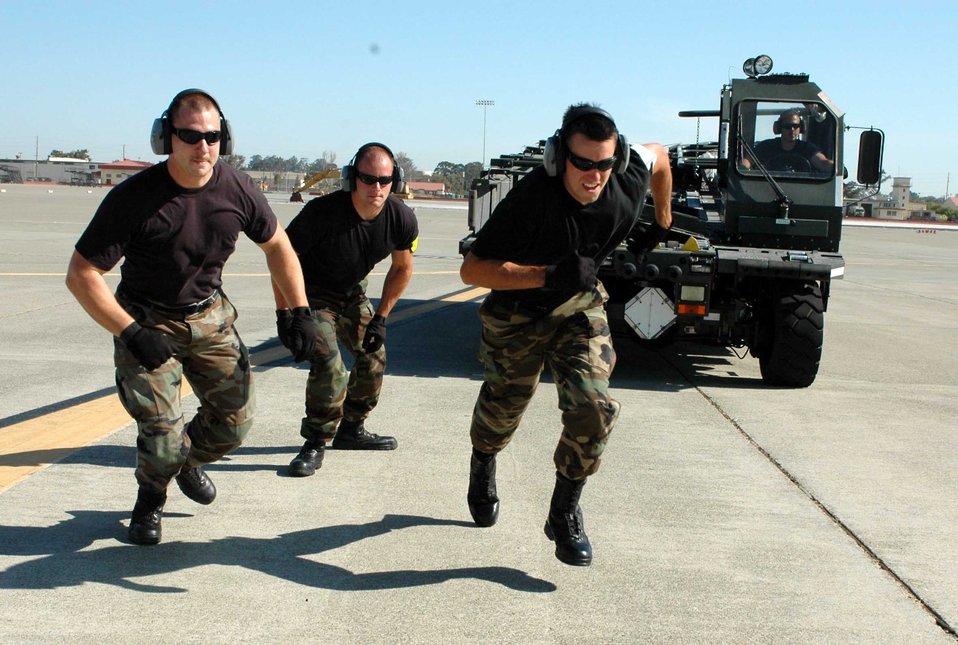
Loading up for Rodeo

Staff Sgt. Joseph Chilton, Senior Airman Brian Harmon, Airman 1st Class Dan Levindofske, sprint toward a C-5 Galaxy, while K-Loader driver Staff Sgt. Mark Hoffman drives a K-Loader to its starting position June 11, during a C-5 engine running on (and) offload practice at Travis Air Force Base, Calif. The 60th Aerial Port Squadron members will be competing at the 2007 Air Mobility Command's Expeditionary Rodeo in July at McChord AFB, Wash. Rodeo team at Travis Air Force Base, Calif.